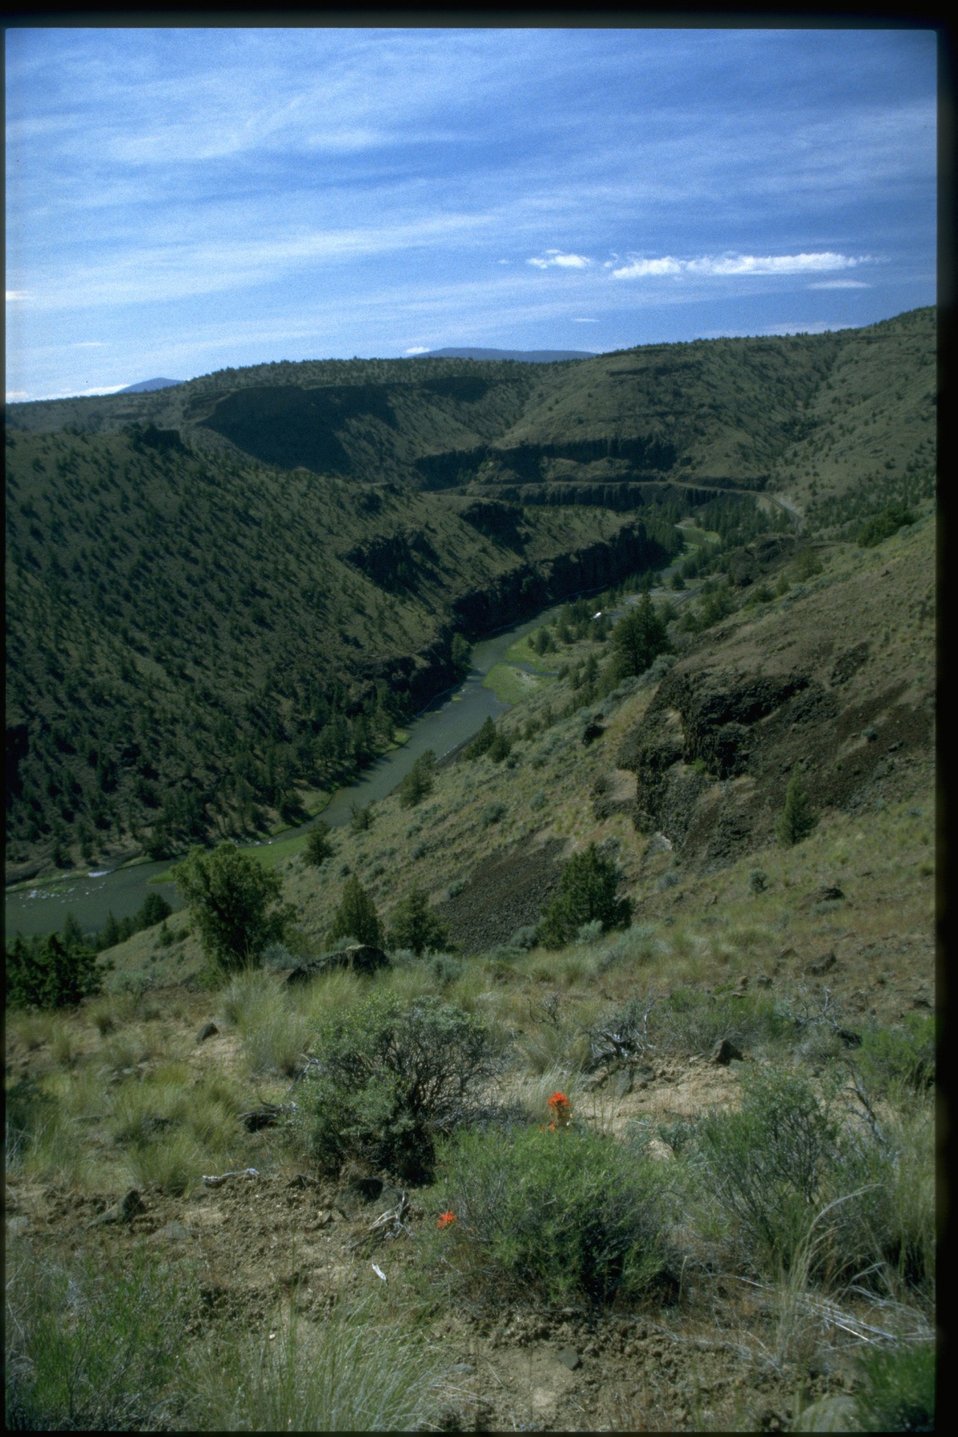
Lower Crooked Wild and Scenic River from Chimney Rock Trail.